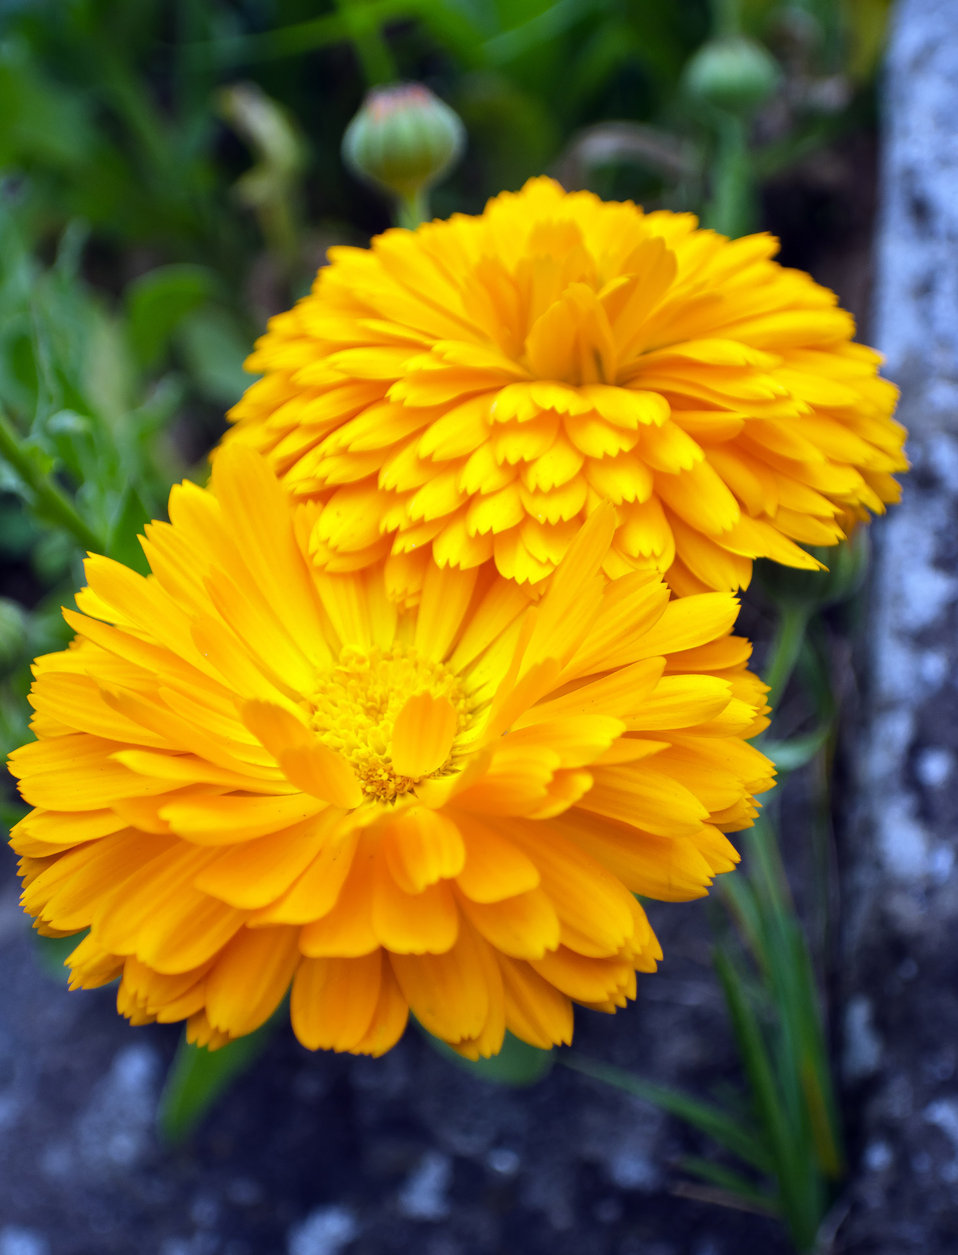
Nice flower.